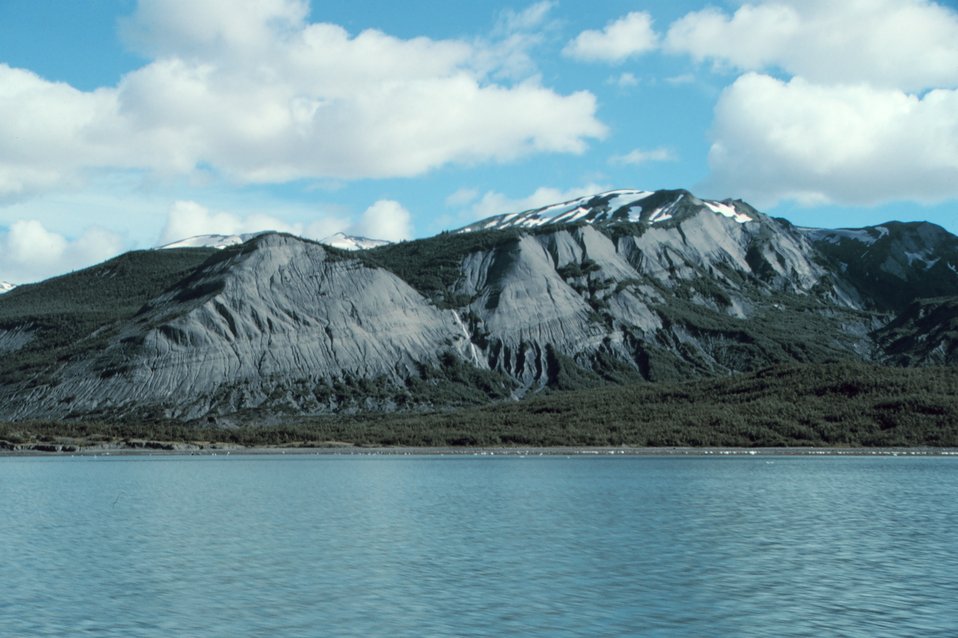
Tilted strata in Tann Fjord.